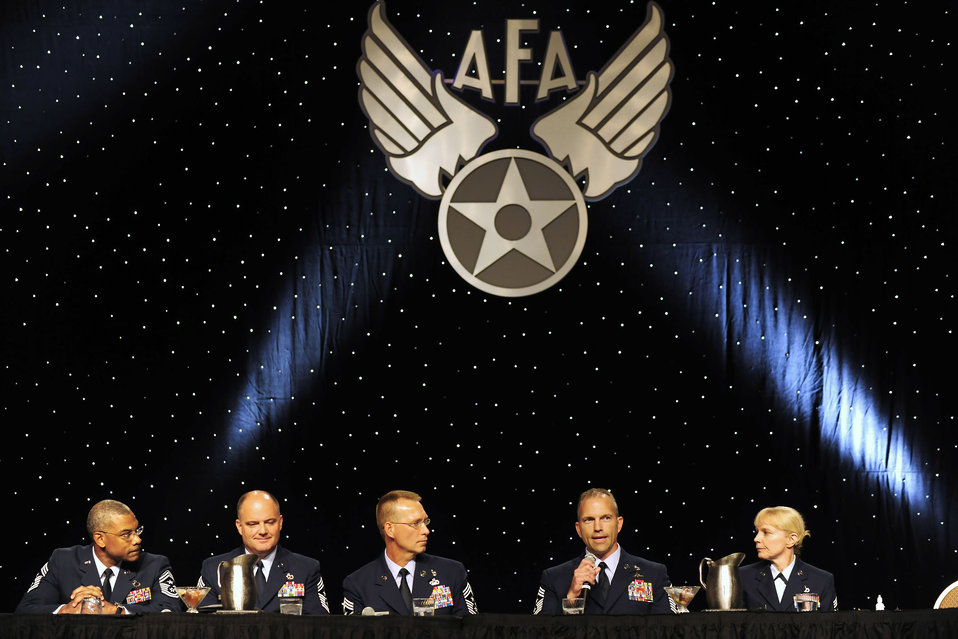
Command Chiefs Forum

Five command chiefs answer questions including topics on fitness, resiliency among Airmen and their families, social media and suicides Sept. 13, 2010, during the Air Force Association's Air and Space Conference and Technology Exposition at National Harbor in Oxon Hill, Md. The forum was lead by Chief Master Sgt. of the Air Force James Roy.